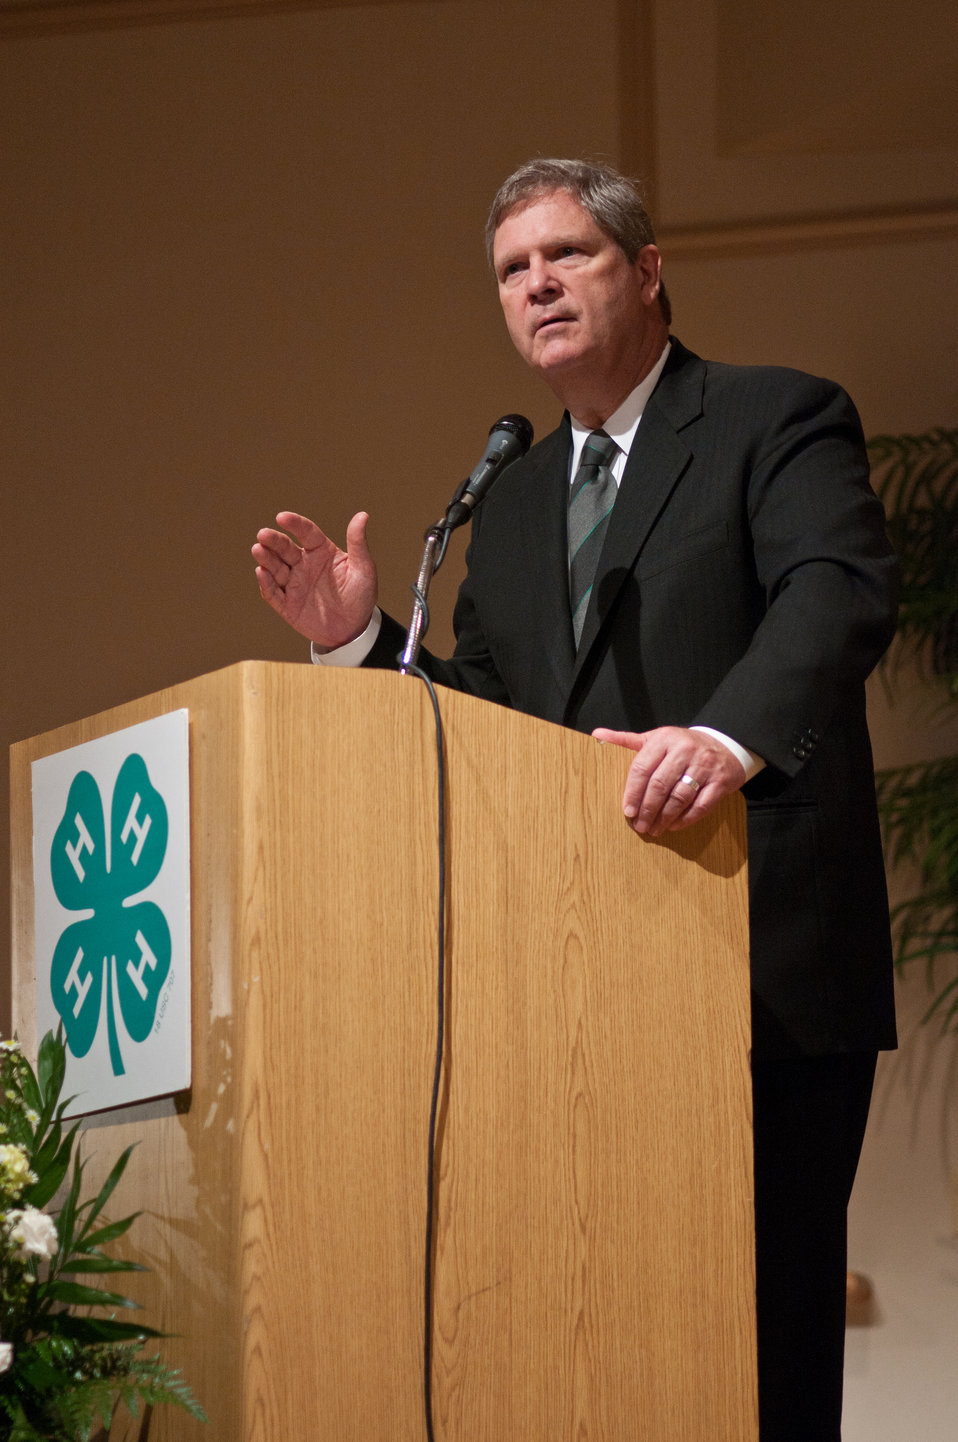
U.S. Department of Agriculture (USDA) Secretary Tom Vilsack responds to Jessica Mullin's question regarding how America will meet future food demands. Part of his reply mentioned the development goal of 1,000 new farmers. The conference is the premier youth development opportunity of the USDA, held in Washington, DC, on Tuesday, April 5, 2011. Aged between 15-19 years old the attendees were selected by various means by their states to be delegates to the conference.